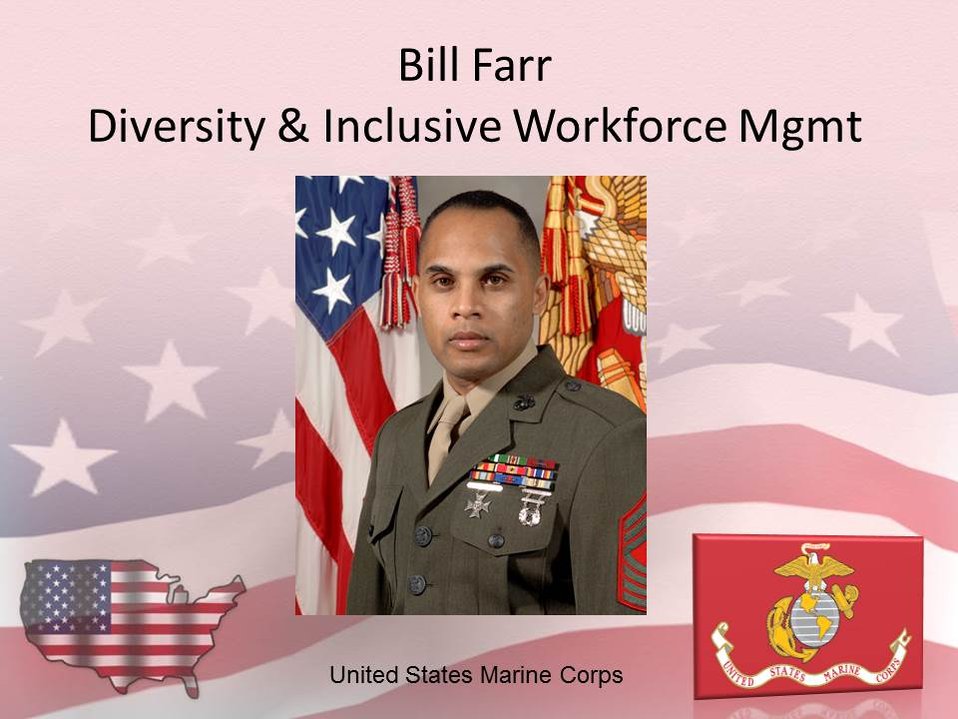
Bill Farr